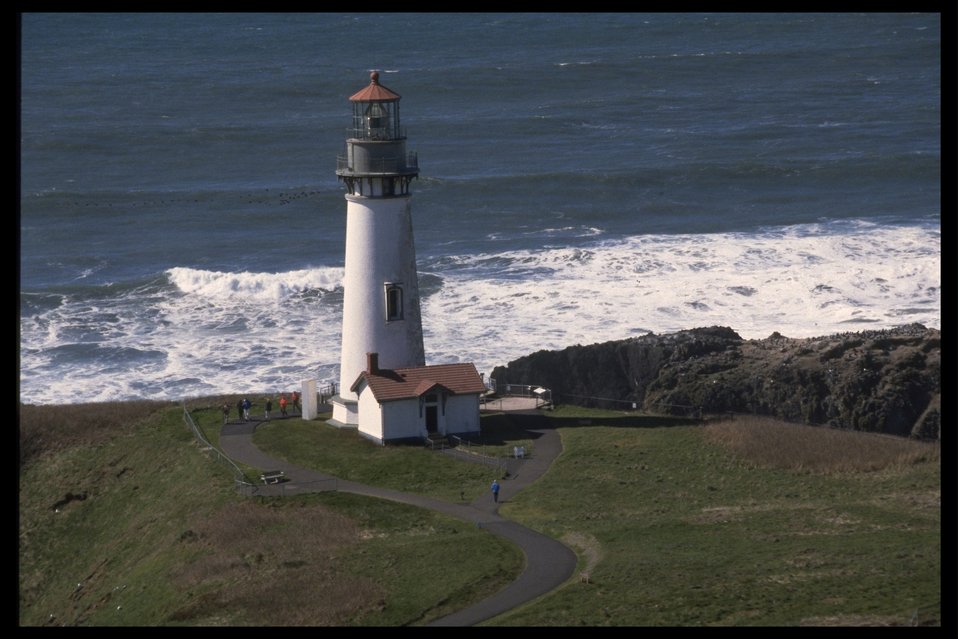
Yaquina Head Lighthouse.